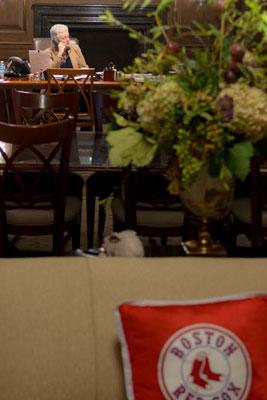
Day in the Life - April 4, 2014

7:51 am - In her office, McCarthy’s support for her beloved Boston Red Sox is apparent. She recently attended an event at the White House to celebrate the World Series champions. (2/12)